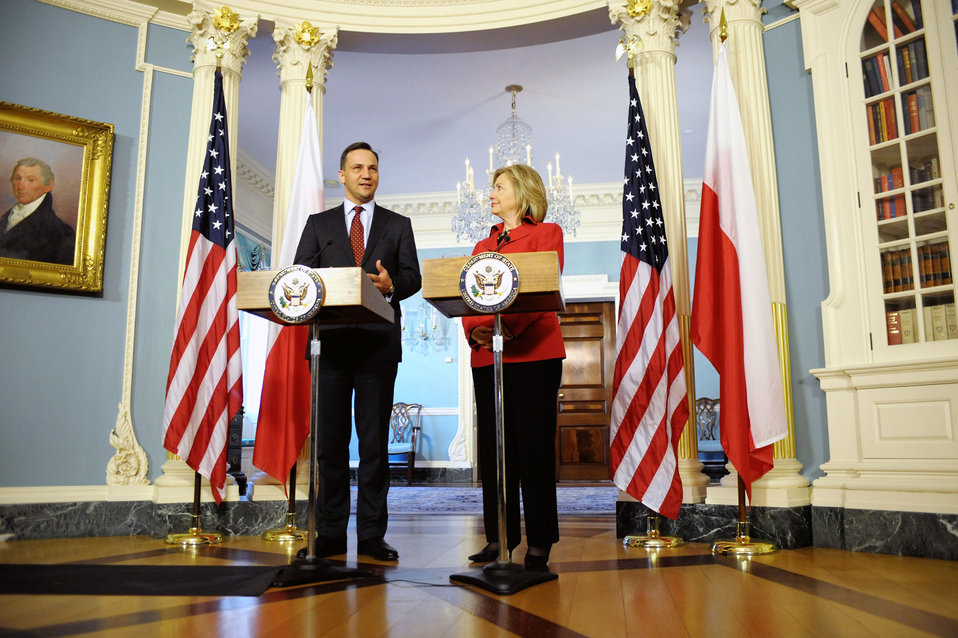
Secretary Clinton and Polish Foreign Affairs Minister Sikorski Hold a Press Conference

U.S. Secretary of State Hillary Rodham Clinton and Polish Foreign Affairs Minister Radoslaw Sikorski hold a joint press conference after their bilateral meeting at the U.S. Department of State in Washington, D.C., on March 3, 2011.